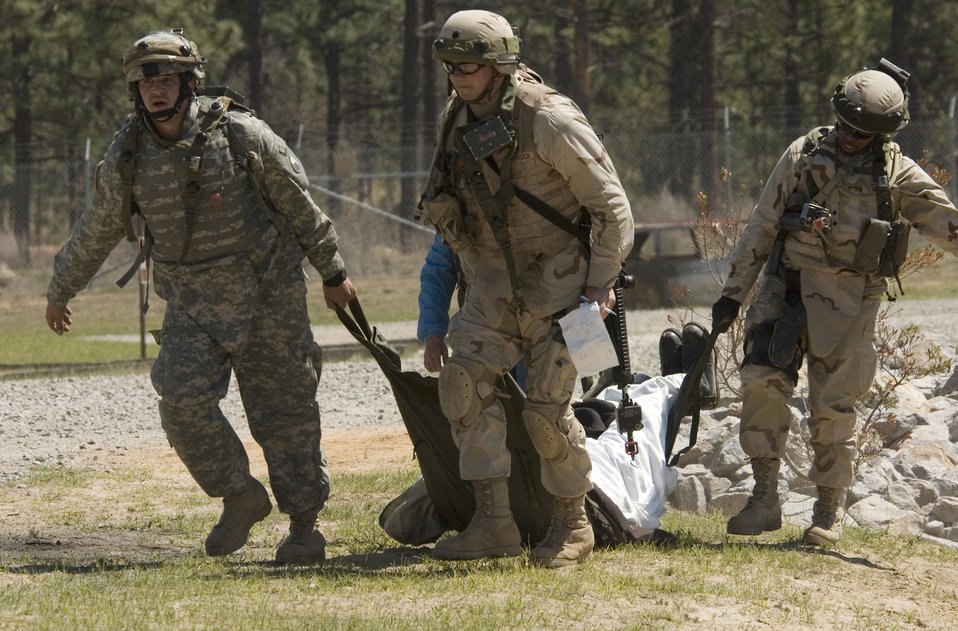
Provincial Reconstruction Team training

Airmen and Soldiers from a multi-service provincial reconstruction team recover simulated victims of an attack during training Tuesday, April 4, 2006, at Fort Bragg, N.C. The team's aim is to help with the reconstruction, security and governing of Afghanistan. The team is training in the United States before deploying for a year.